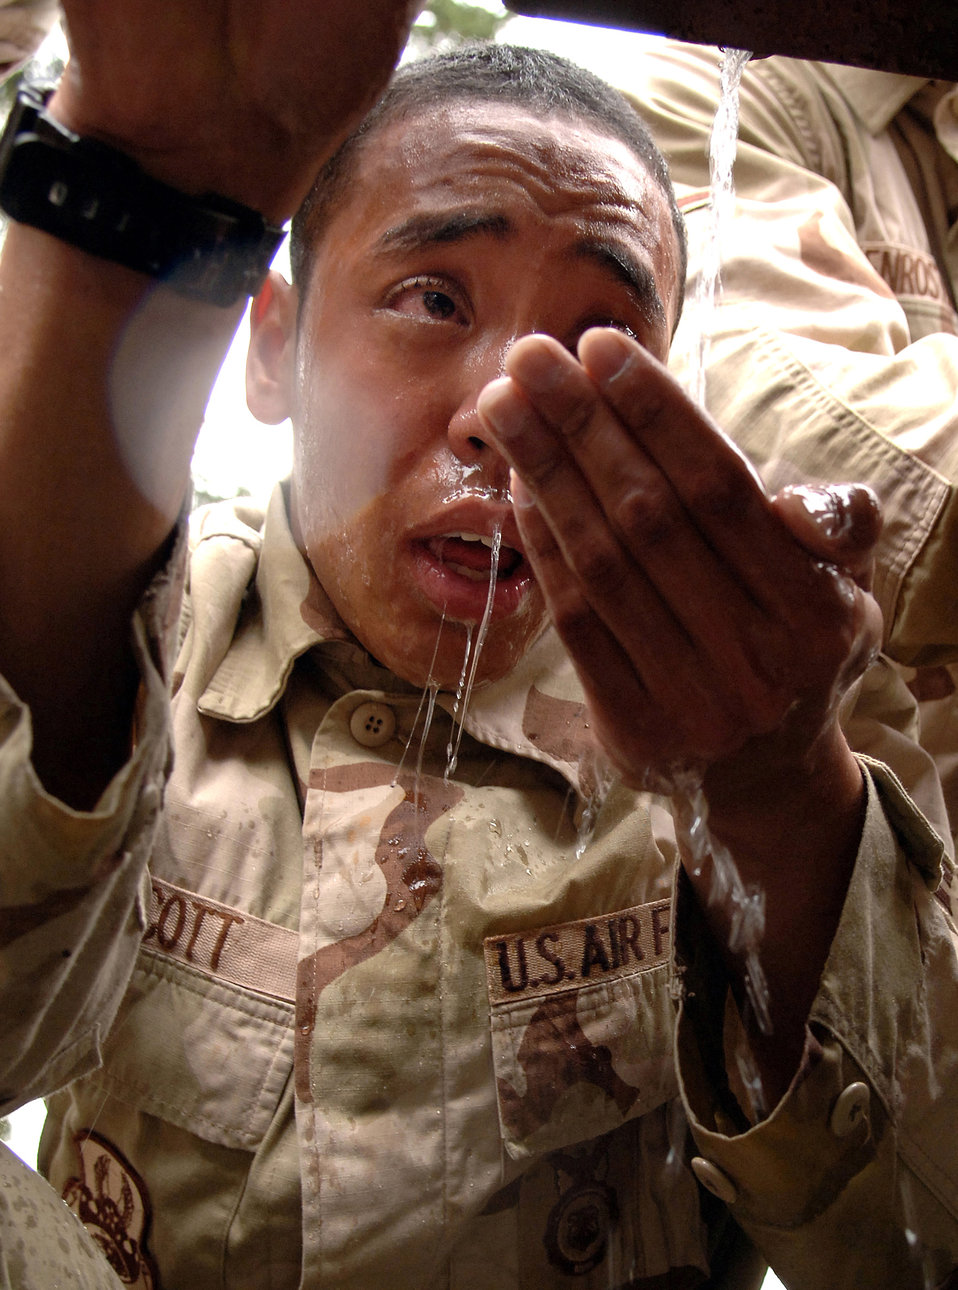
Detainee training operations teach survival skills

Airman 1st Class Gordon Scott tries to wash pepper-spray out of his eyes after completing an obstacle course on April 25, 2006, during detainee training operations at Fort. Lewis, Wash. Getting sprayed and then negotiating an obstacle course teaches Airmen how to successfully function and protect themselves while feeling the effects of the spray. This training prepares Airmen by replicating situations they may encounter while deployed. Airman Scott is with the 99th Security Forces Squadron at Nellis Air Force Base, Nev.